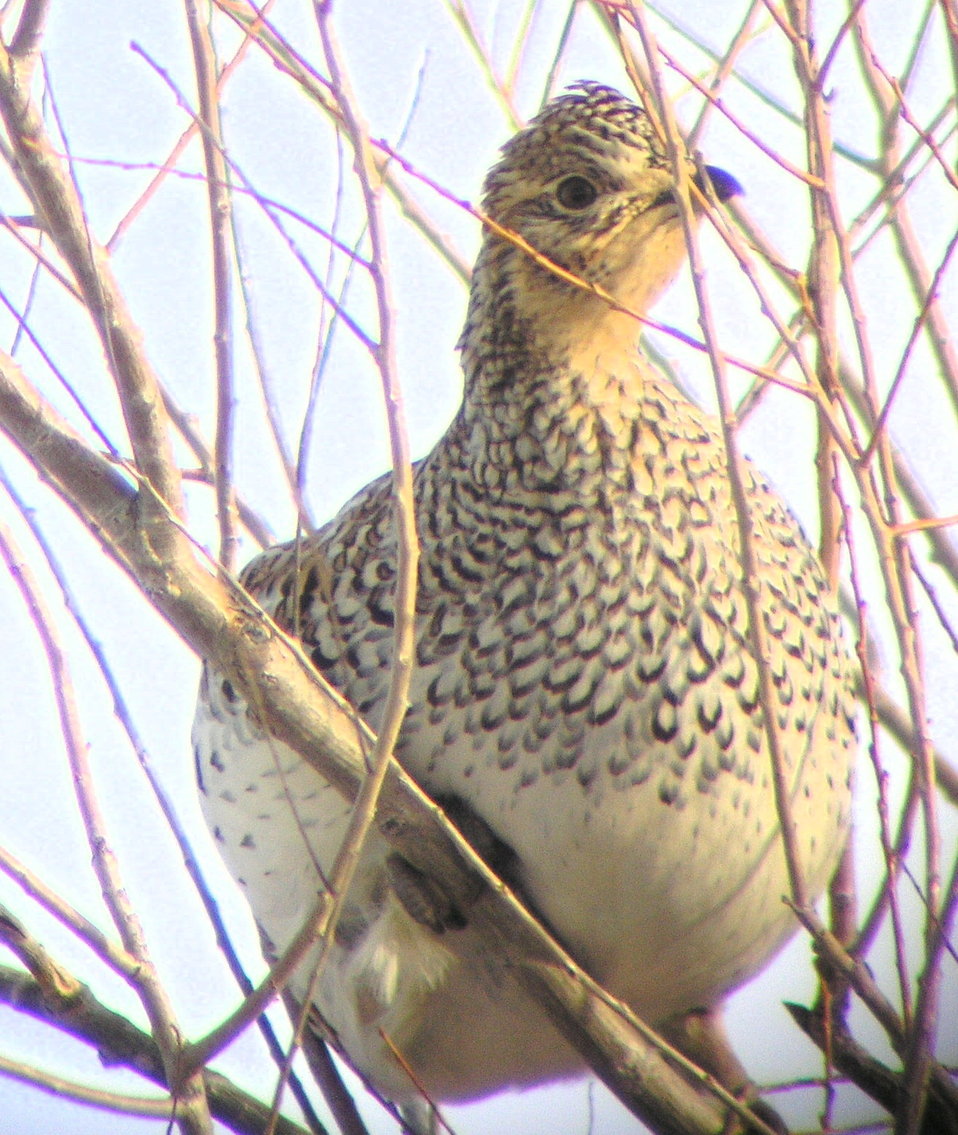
Sharp-tailed Grouse in Tree Lacreek NWR